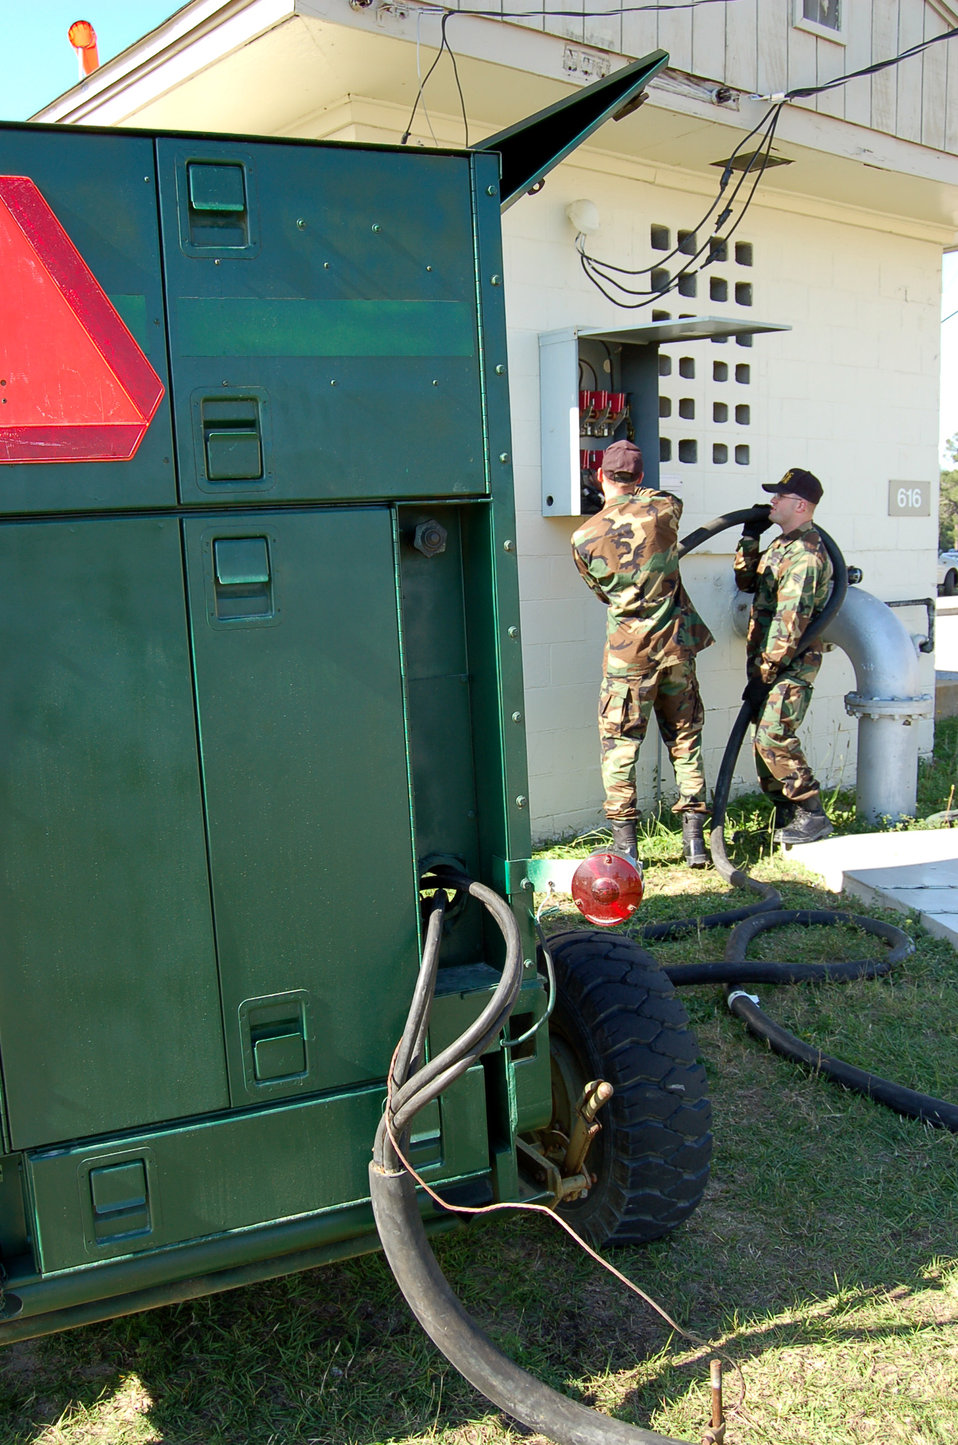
Hurricane response

Airman 1st Class Jeb Carter, left, hooks up a mobile generator to a building with help from Senior Airman Royal Archer at Eglin Air Force Base, Fla., on Wednesday, May 17, 2006. The electrical power production troops with the 796th Civil Engineer Squadron generator section practice setting up generators in case a powerful storm cuts their commercial power. Eglin held a three-day exercise May 15 through May 17, called